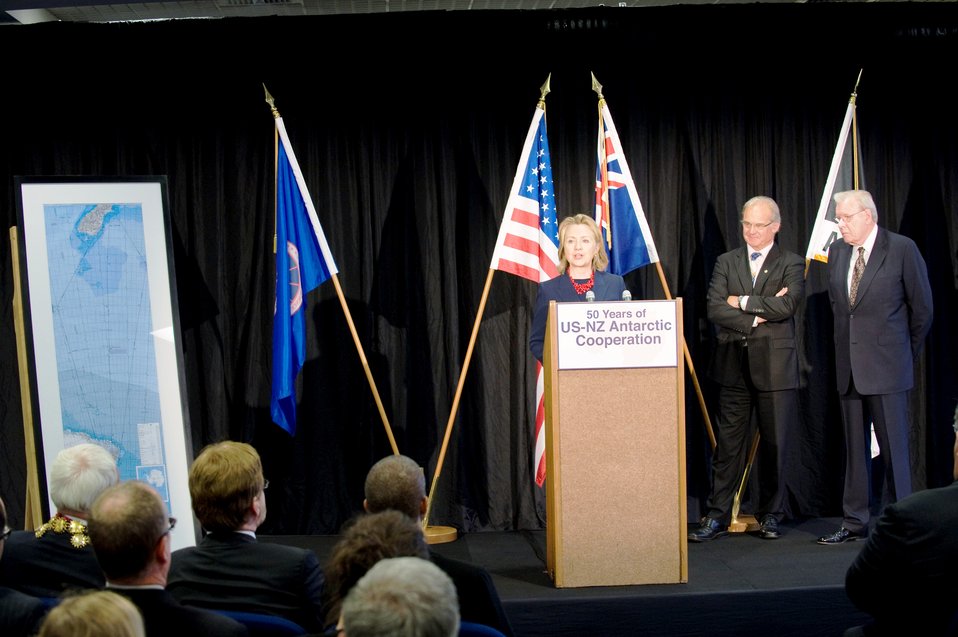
Secretary Clinton Delivers Remarks on the Antarctic Program

U.S. Secretary of State Hillary Rodham Clinton delivers remarks at an event with the U.S. Antarctic Center and Antarctica New Zealand in Christchurch, New Zealand, on November 5, 2010. Also on stage are Rob Fenwick (left), Chair of Antarctica New Zealand, and Art Brown (right), the Christchurch-based representative of the National Science Foundation.